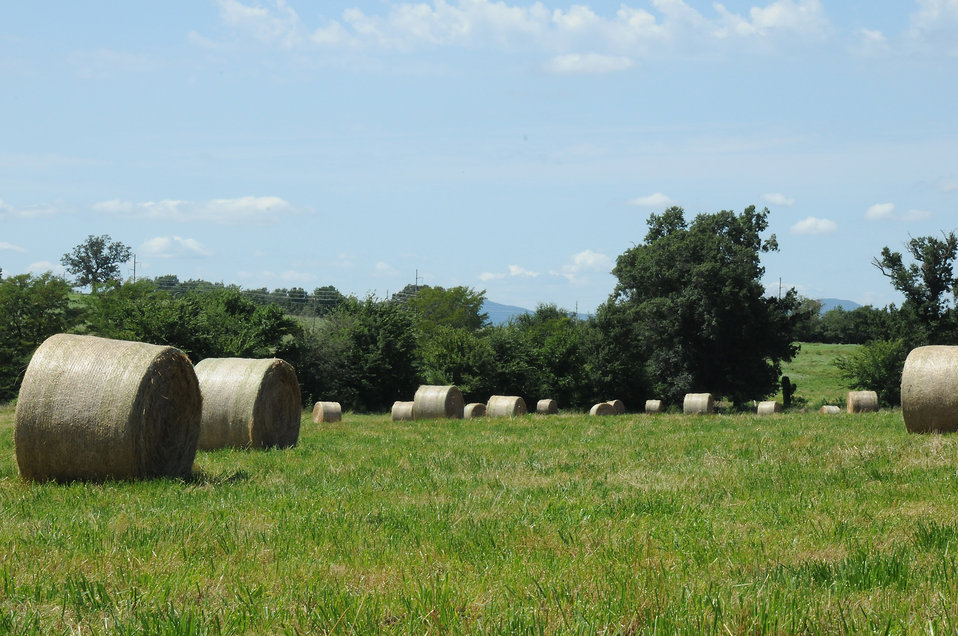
Baled hay waits for collection on a farm in Oklahoma on August 11, 2009.